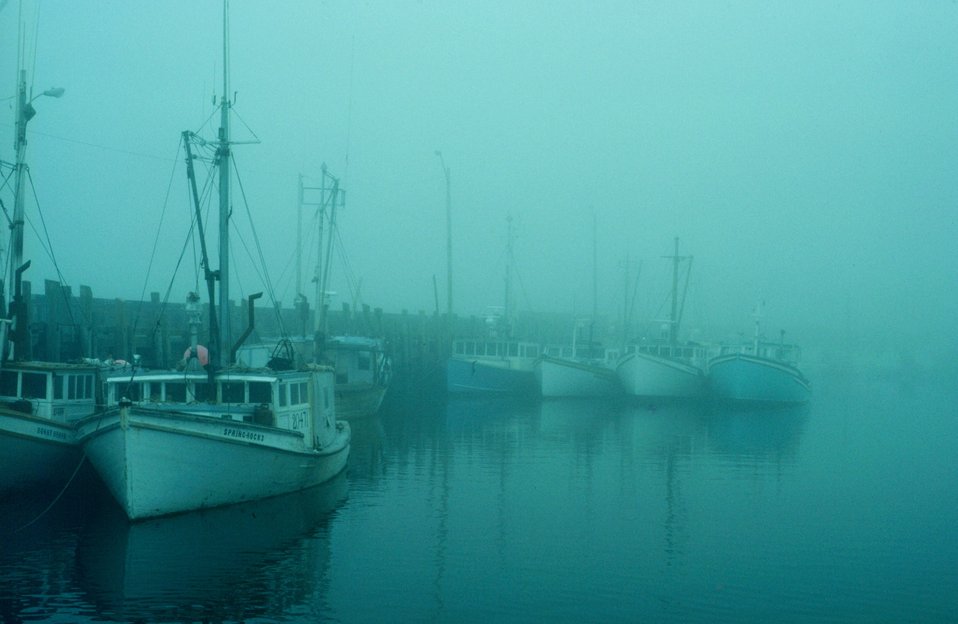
Foggy day in a New Brunswick fishing village.